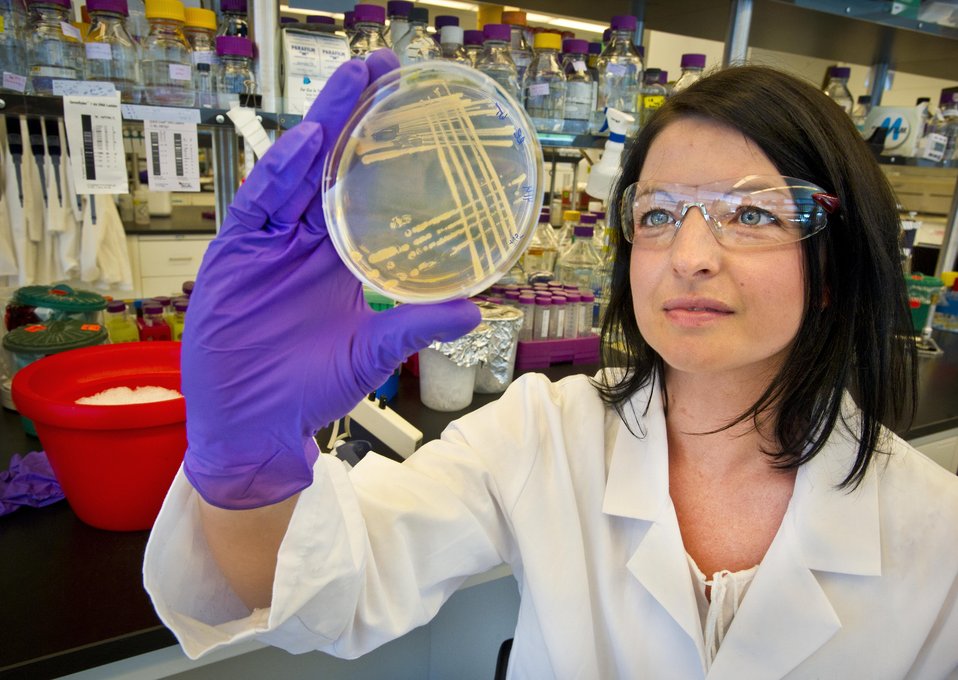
Lawrence Berkeley National Laboratory scientists are exploring whether a common soil bacterium can be engineered to produce liquid transportation fuels much more efficiently than the ways in which advanced biofuels are made today. The process would be powered only by hydrogen and electricity. The goal is a biofuel-or electrofuel, as this new approach is called-that doesn't require photosynthesis.